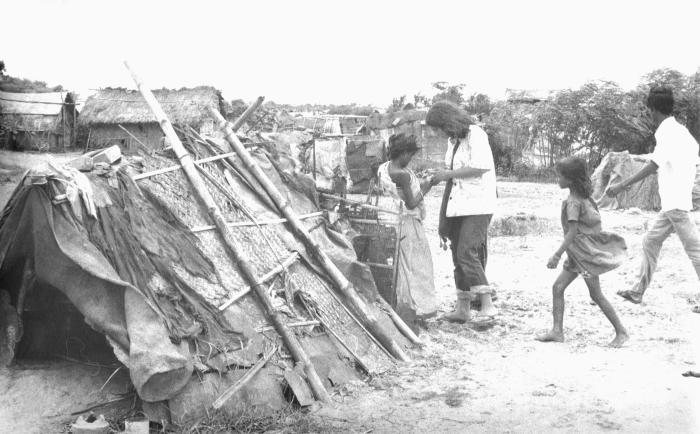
This 1975 photograph depicted a smallpox eradication team member, Jennifer Alpern (woman in white), discussing the 'smallpox card' with a young bastee inhabitant, which showed a smallpox case example, described the reward associated with ones discovery of a smallpox case, and asked if one knew of any such cases. Ms. Alpern, the daughter of U.S. diplomat Stanley Alpern, was a volunteer 'searcher' in Bangladesh under the leadership of Dr. Bruce Weniger, a World Health Organization (WHO) epidemiologist. During these country wide searches for smallpox, each one of the 12 million homes had to be visited, in order to show residents the smallpox case photograph, as well as ask pertinent, investigative questions. Some of these homes were located inside the transient communities known as bastees, which were non-governmentally controlled, and where squalor ran rampant. The 'homes' were more or less makeshift tent-houses, with no utilities such as running water or electricity.